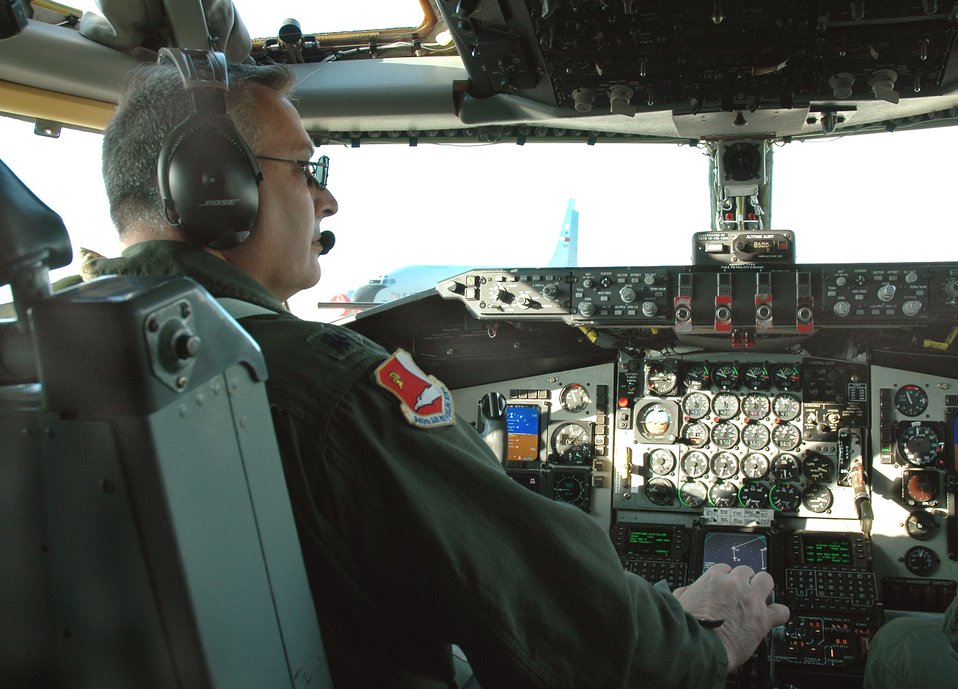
Topping off the Extender

Lt. Col. Jonathan Philebaum prepares to taxi a KC-135 Stratotanker onto the runway for an air-to-air refueling training mission Jan. 3 at Beale Air Force Base, Calif. Colonel Philebaum is a 940th Air Refueling Wing pilot.